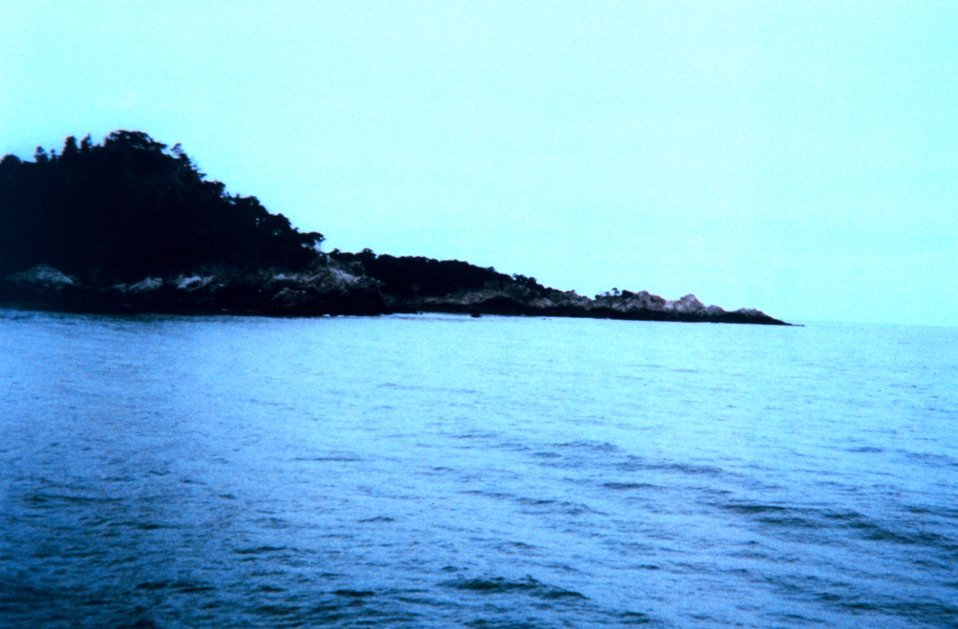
Portion of composite image of Point Lobos.